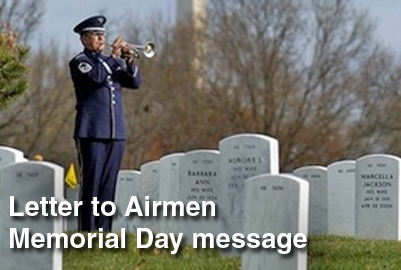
Senior leaders issue Memorial Day message.